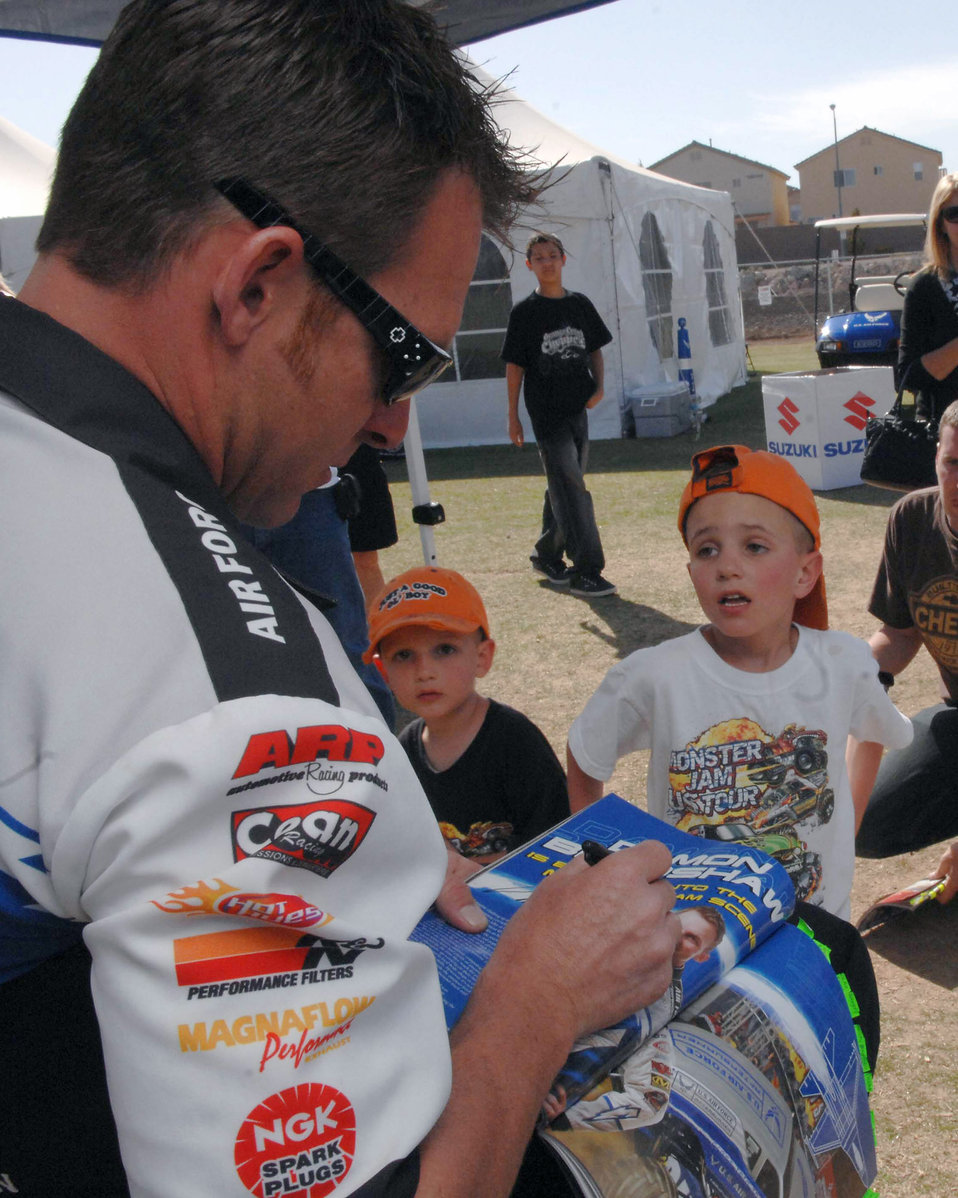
Air Force monster truck wows Las Vegas crowd

Damon Bradshaw signs autographs for young fans at the Monster Jam World Finals March 29 in Las Vegas. Mr. Bradshaw is the driver of the Air Force Afterburner monster truck